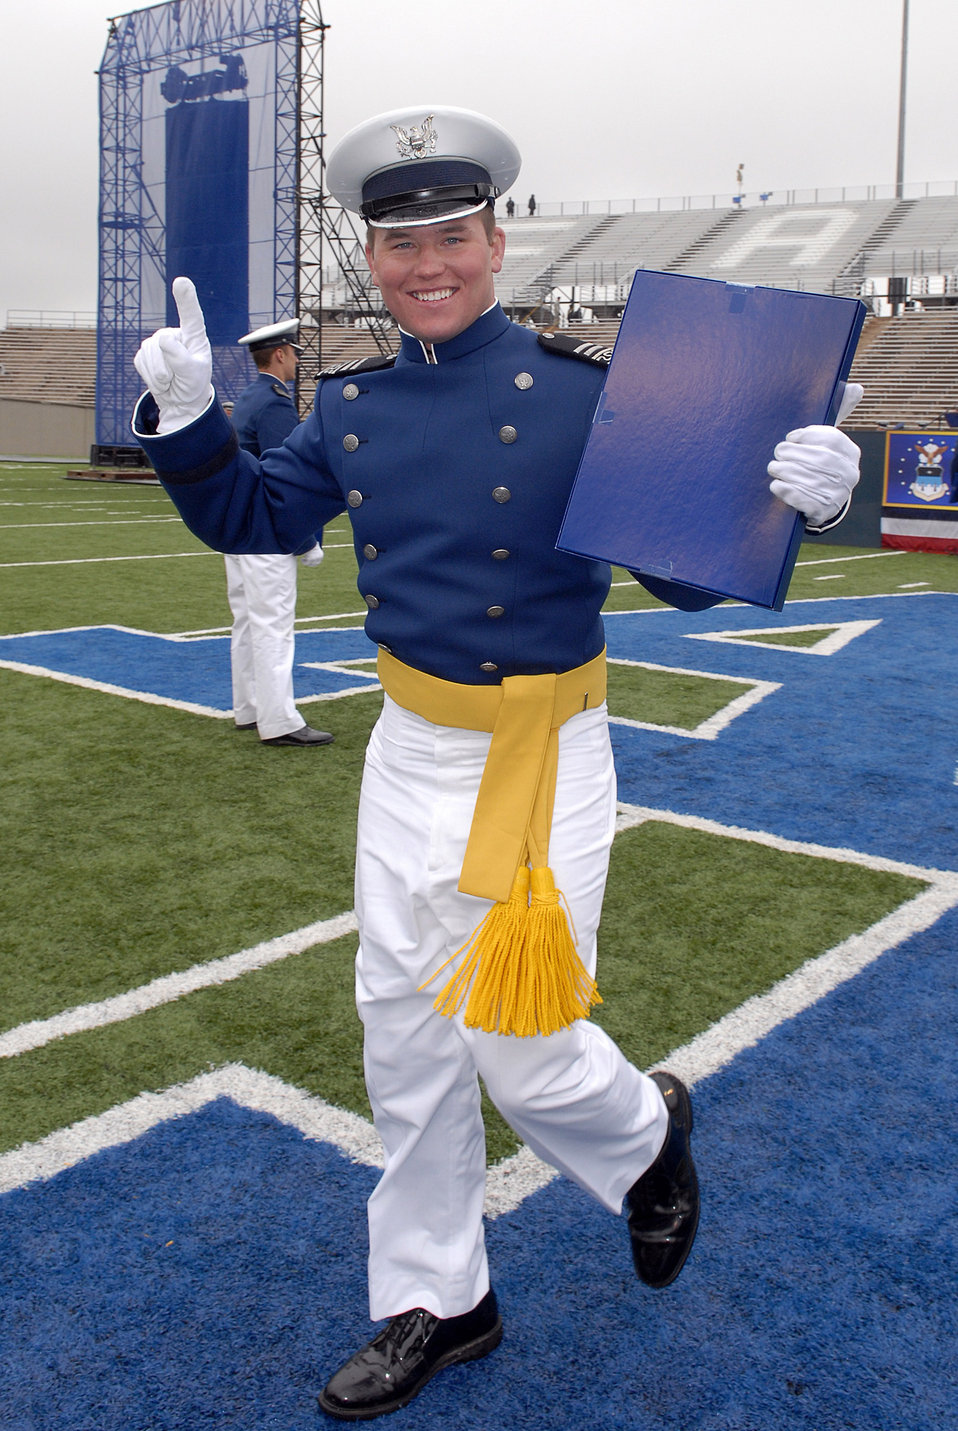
Academy Class of 2008 graduates

Newly-graduated 2nd Lt. Shaun Carney celebrates during the U.S. Air Force Academy Class of 2008 Graduation Ceremony at Falcon Stadium May 28. Lieutenant Carney was the starting quarterback for the Academy football team. The Class of 2008, the 50th Academy class, comprised 1,012 cadets who will enter the Air Force as second lieutenants.